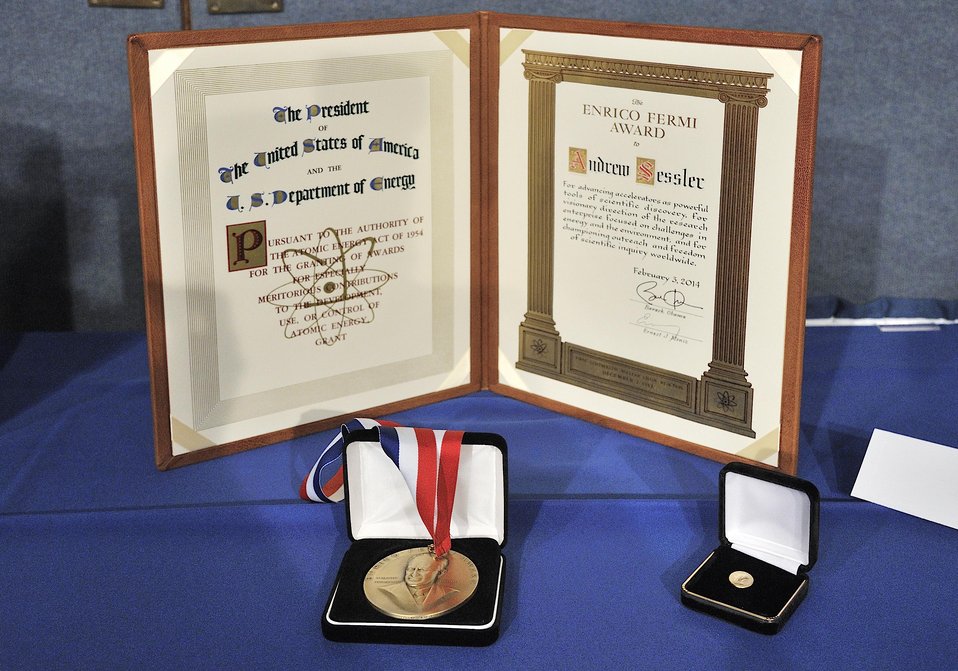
FERMI AWARD AND MEDAL FOR ANDREW SESSLER